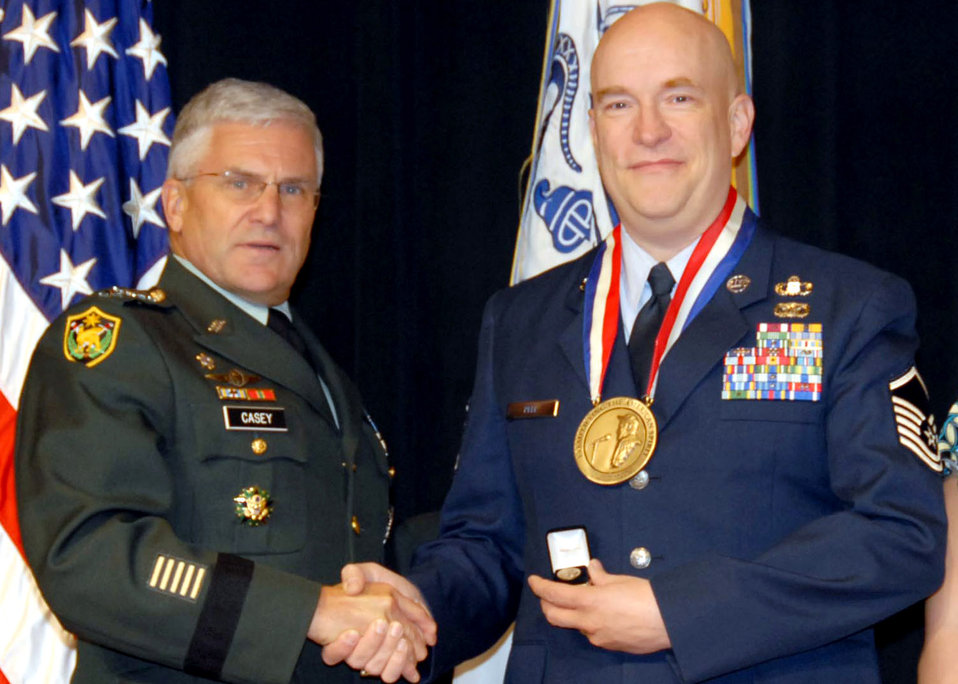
NCO earns Spirit of Hope Award

Master Sgt. Lou Pell receives the Spirit of Hope award from Army Chief of Staff Gen. George W. Casey Jr. at the Pentagon Nov. 19.